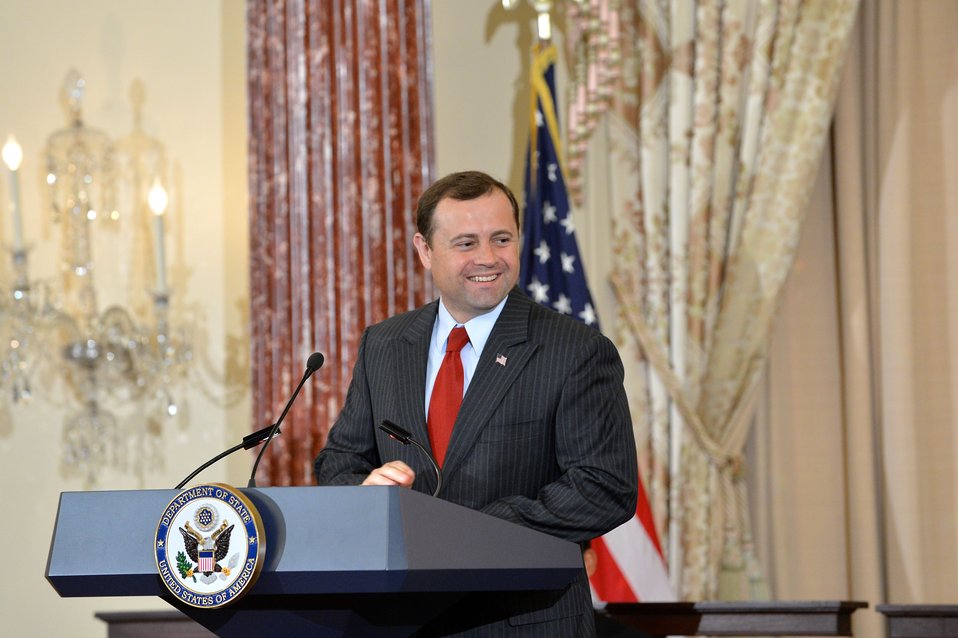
Special Representative Perriello Delivers Remarks at the QDDR Launch

Special Representative for the Quadrennial Diplomacy and Development Review Tom Perriello delivers remarks at the public launch of the Department of State and U.S. Agency for International Development (USAID) review process for the second Quadrennial Diplomacy and Development Review (QDDR) at the U.S. Department of State in Washington, D.C., on April 22, 2014. Special Representative Perriello is joined by U.S. Secretary of State John Kerry, Deputy Secretary of State for Management and Resources Heather Higginbottom, and USAID Administrator Rajiv Shah.